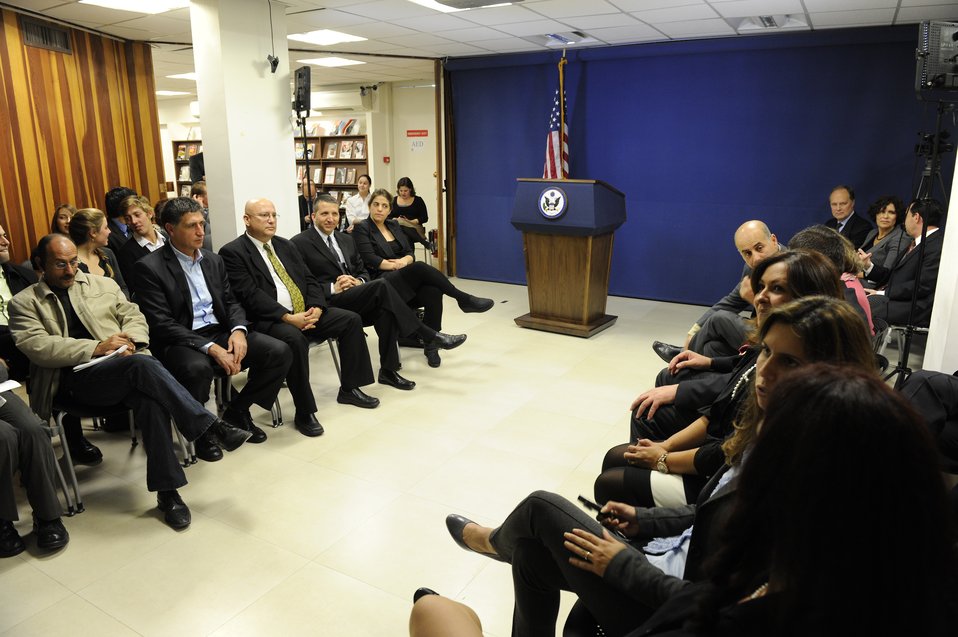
Ambassador Cunningham, Consul General Rubinstein, and CISCO Senior Manager Abzuk Celebrate the ACE Award in Jerusalem

U.S. Ambassador to Israel James Cunningham, U.S. Consul General to Israel Daniel Rubinstein, and Cisco Senior Manager Zika Abzuk, linked via digital video conference with the Secretary of State's Award for Corporate Excellent (ACE) event in Washington, D.C., celebrate the Award at a Jerusalem event in Israel, December 17, 2010.